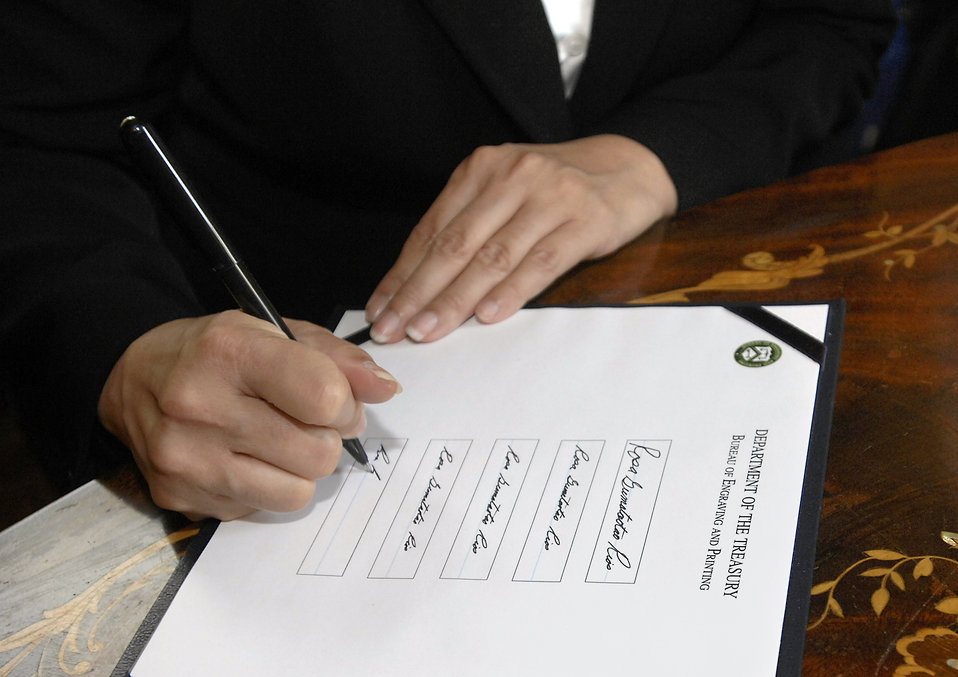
Rios signing

Treasurer of the United States Rosie Rios’s signature will be featured on all new bills printed by the Bureau of Engraving and Printing.